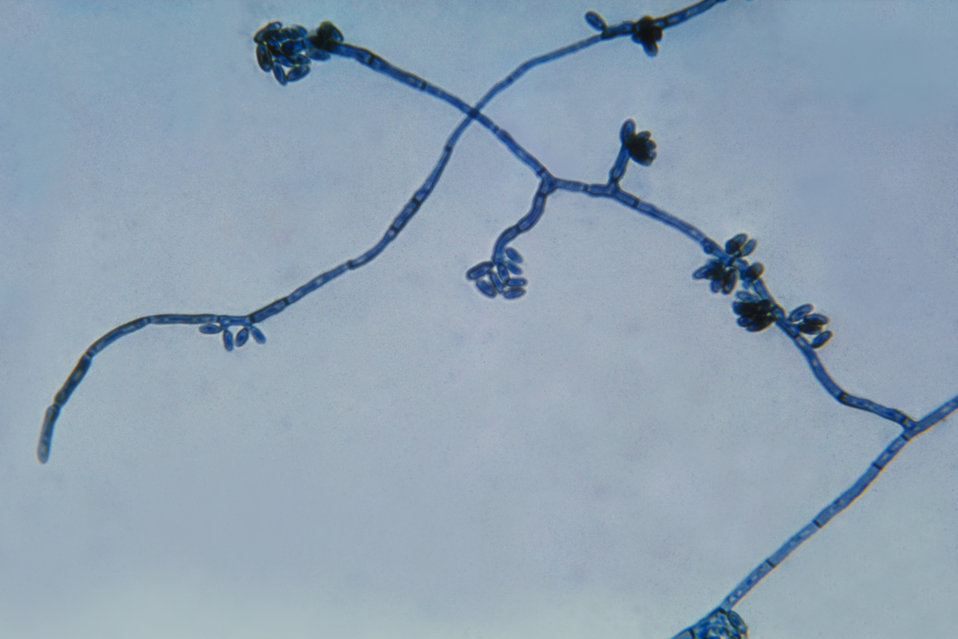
This is a photomicrograph of the fungus Hortaea werneckii, the causative agent of Tinea Nigra.